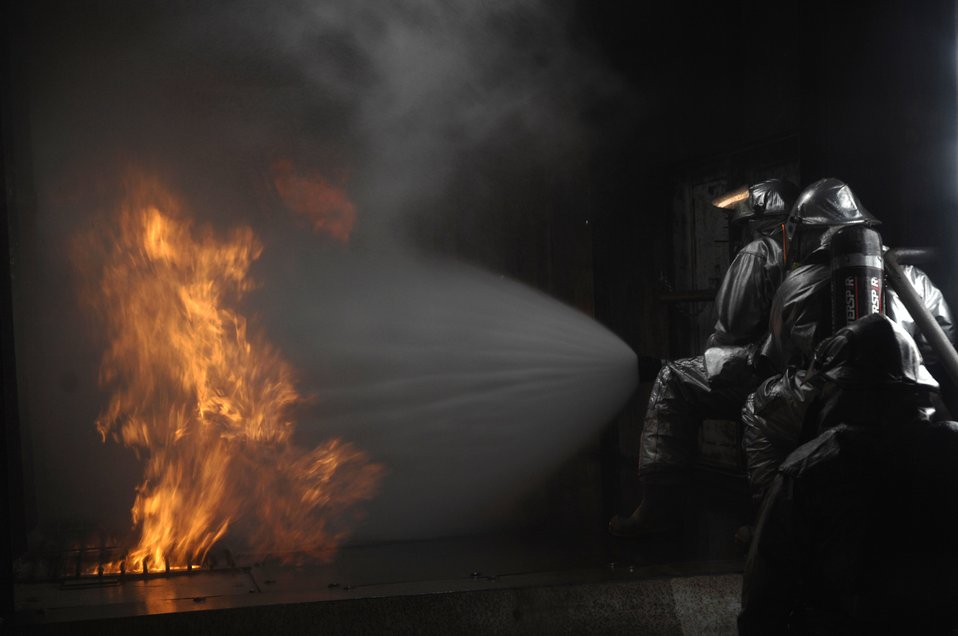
Battling the heat

48th Civil Engineer Squadron firefighters extinguish a simulated battery fire inside an aircraft fire trainer March 8 at Royal Air Force Mildenhall, England. Firefighters must train constantly to stay proficient in their aircraft rescue and firefighting skills.